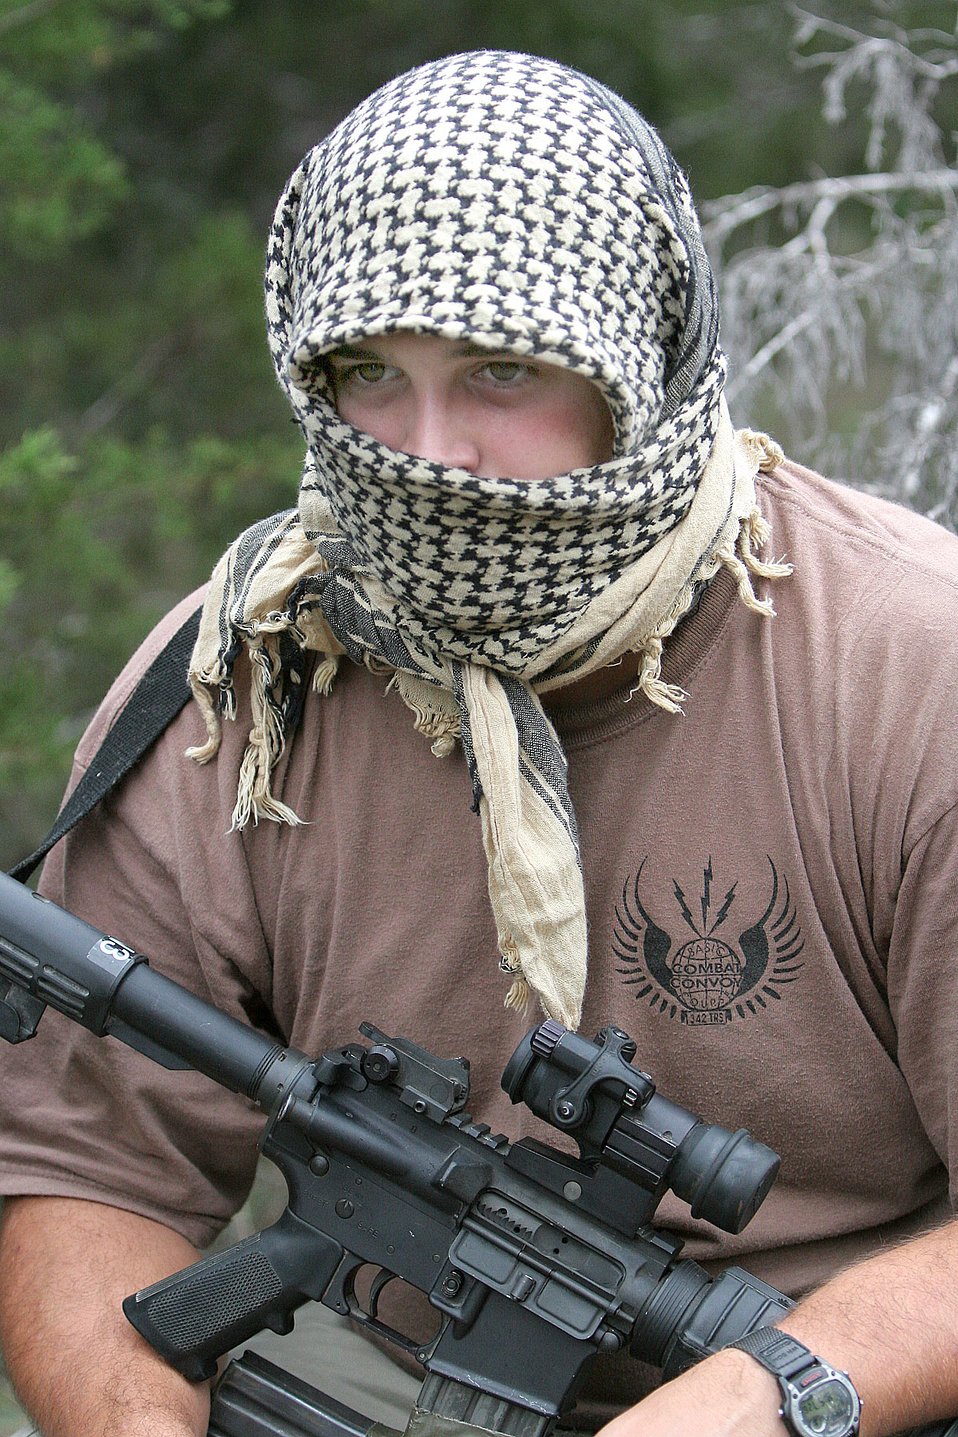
Combat convoy training

CAMP BULLIS, Texas -- Staff Sgt. Kendall Beasley plays the part of an insurgent as he waits to